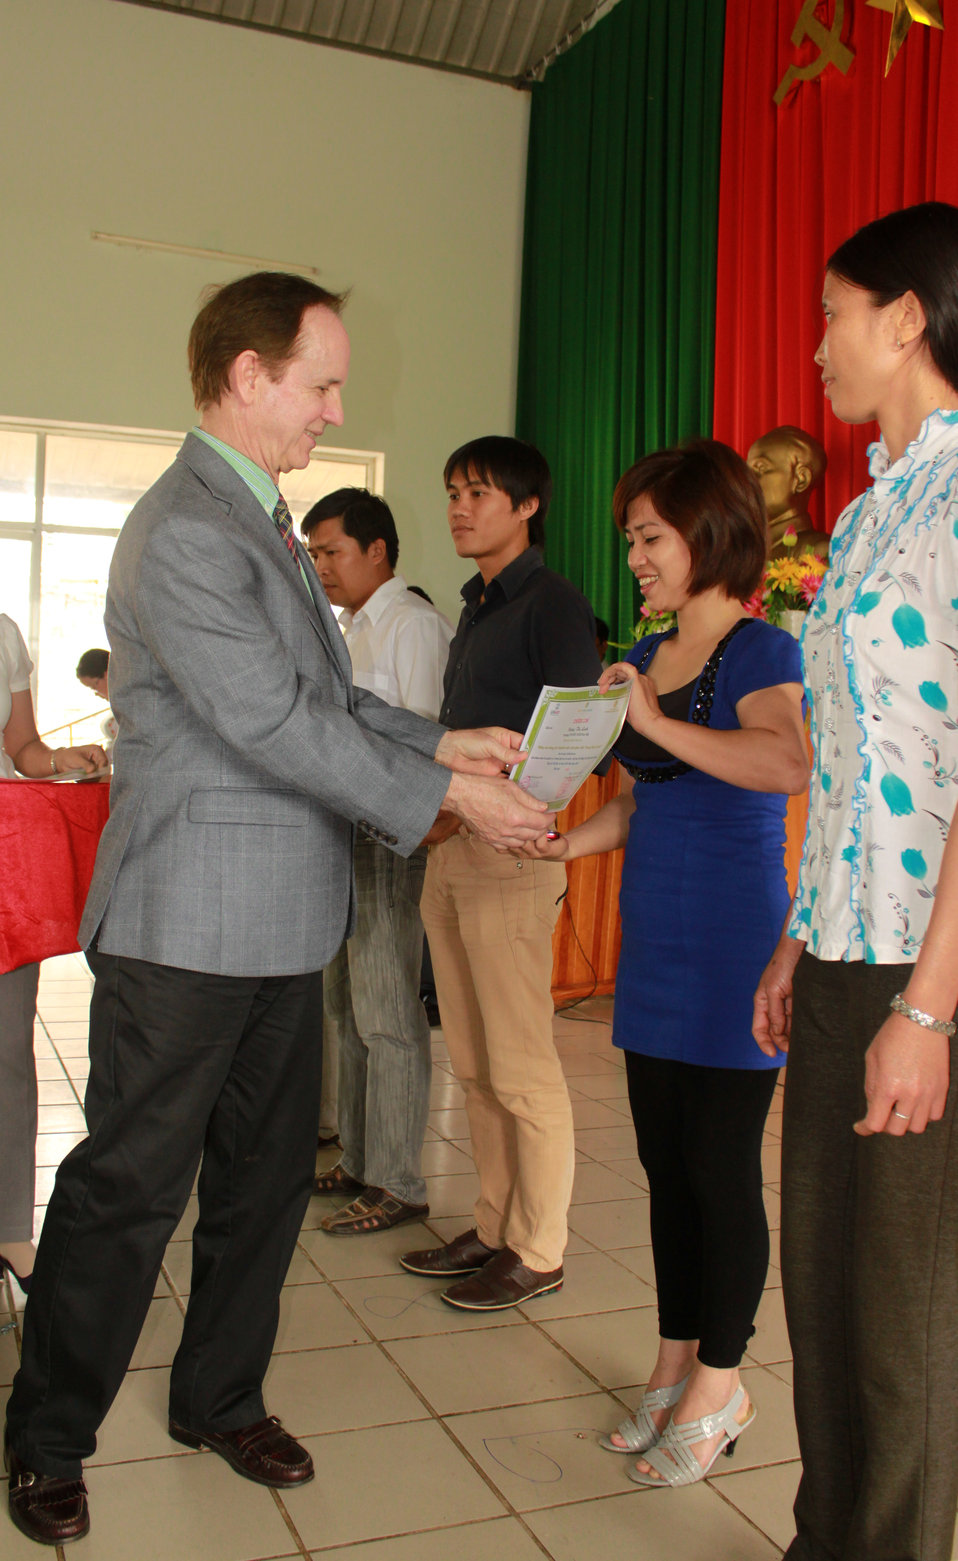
USAID Mission Director Francis Donovan gives certificates to teachers at the graduation ceremony